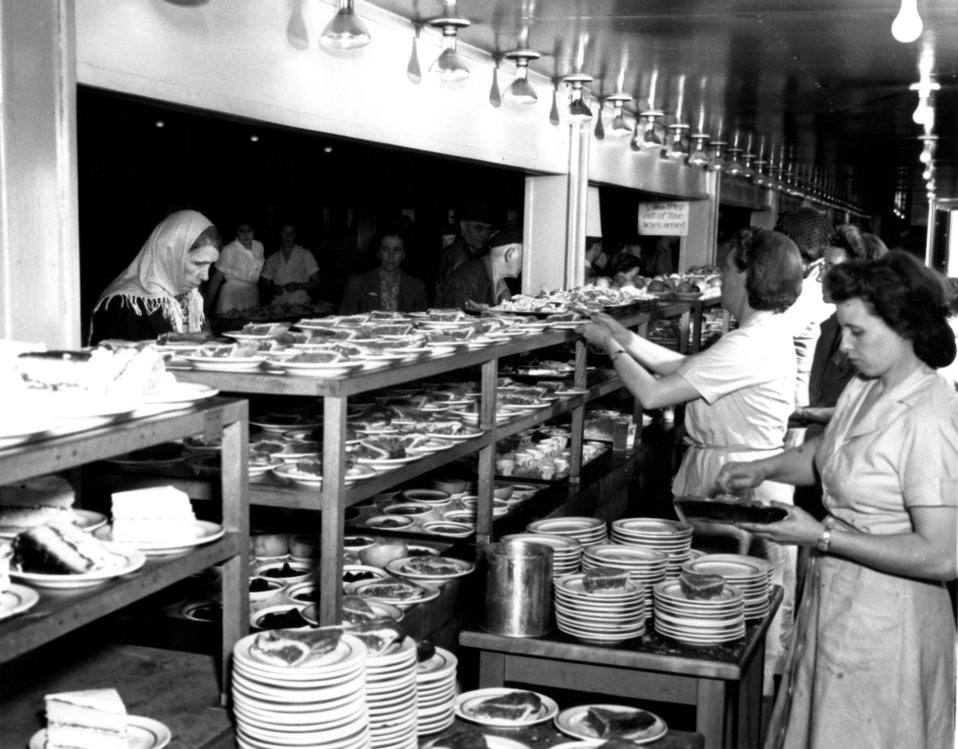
Daily Life at Oak Ridge